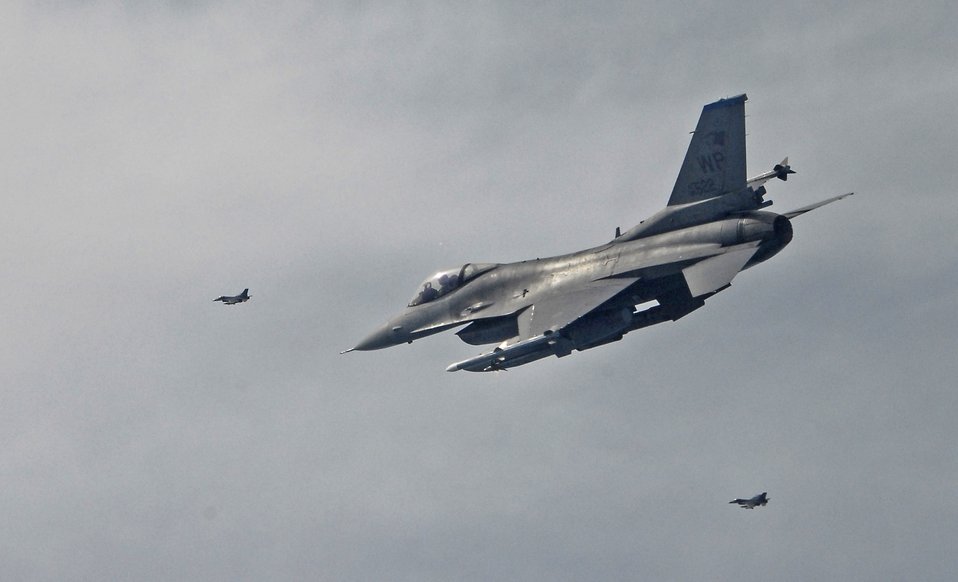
Kunsan pilots improve capability with AIM-9X missile

F-16 Fighting Falcon pilots conduct AIM-9 missile training Feb. 28 over the South Korean peninsula. The Air Intercept Missile-9X Sidewinder, developed by Raytheon engineers, is a fifth generation AIM-9 missile that is a substantial upgrade to the Sidewinder family featuring an advanced infra-red seeker and a higher off-bore sight capability. The F-16 pilots are assigned to the 35th Fighter Squadron from Kunsan Air Base, South Korea.